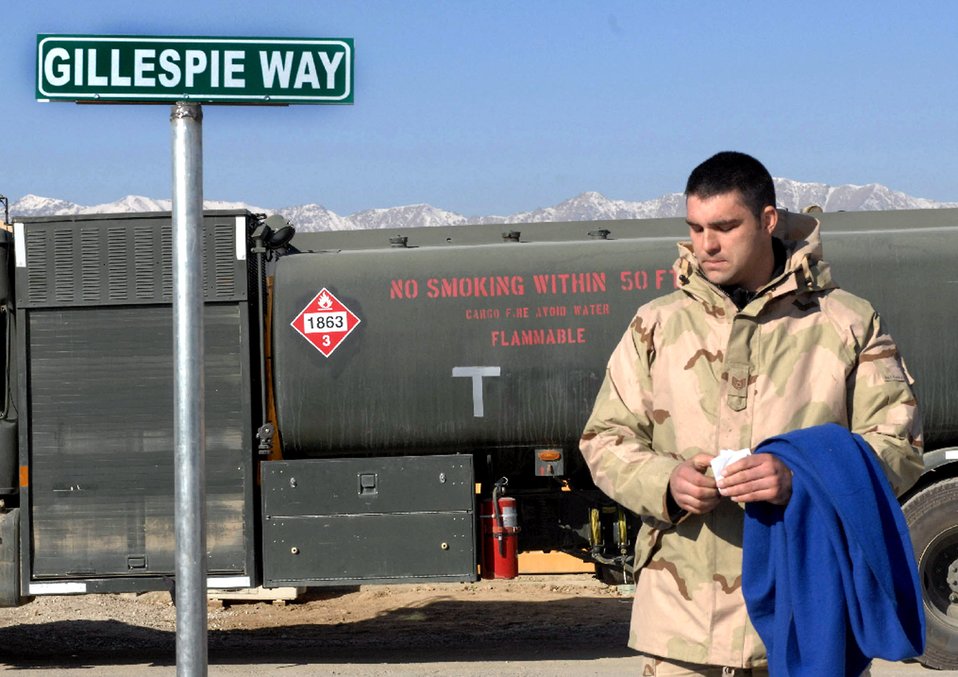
Airmen honor fallen comrade

Tech. Sgt. Blaine Arsenault pauses for a moment of silence Dec. 1after unveiling a sign dedicating a road near the fuel farm at Bagram Air Base, Afghanistan, to the memory of fallen Airmen Master Sgt. Randy Gillespie. Sergeant Gillespie was Sergeant Arsenault's first supervisor and a career fuels specialist who died July 9 from wounds sustained during small arms fire near Herat, Afghanistan. Sergeant Arsenault is a career fuels specialist with the 455th Expeditionary Logistics Readiness Squadron.